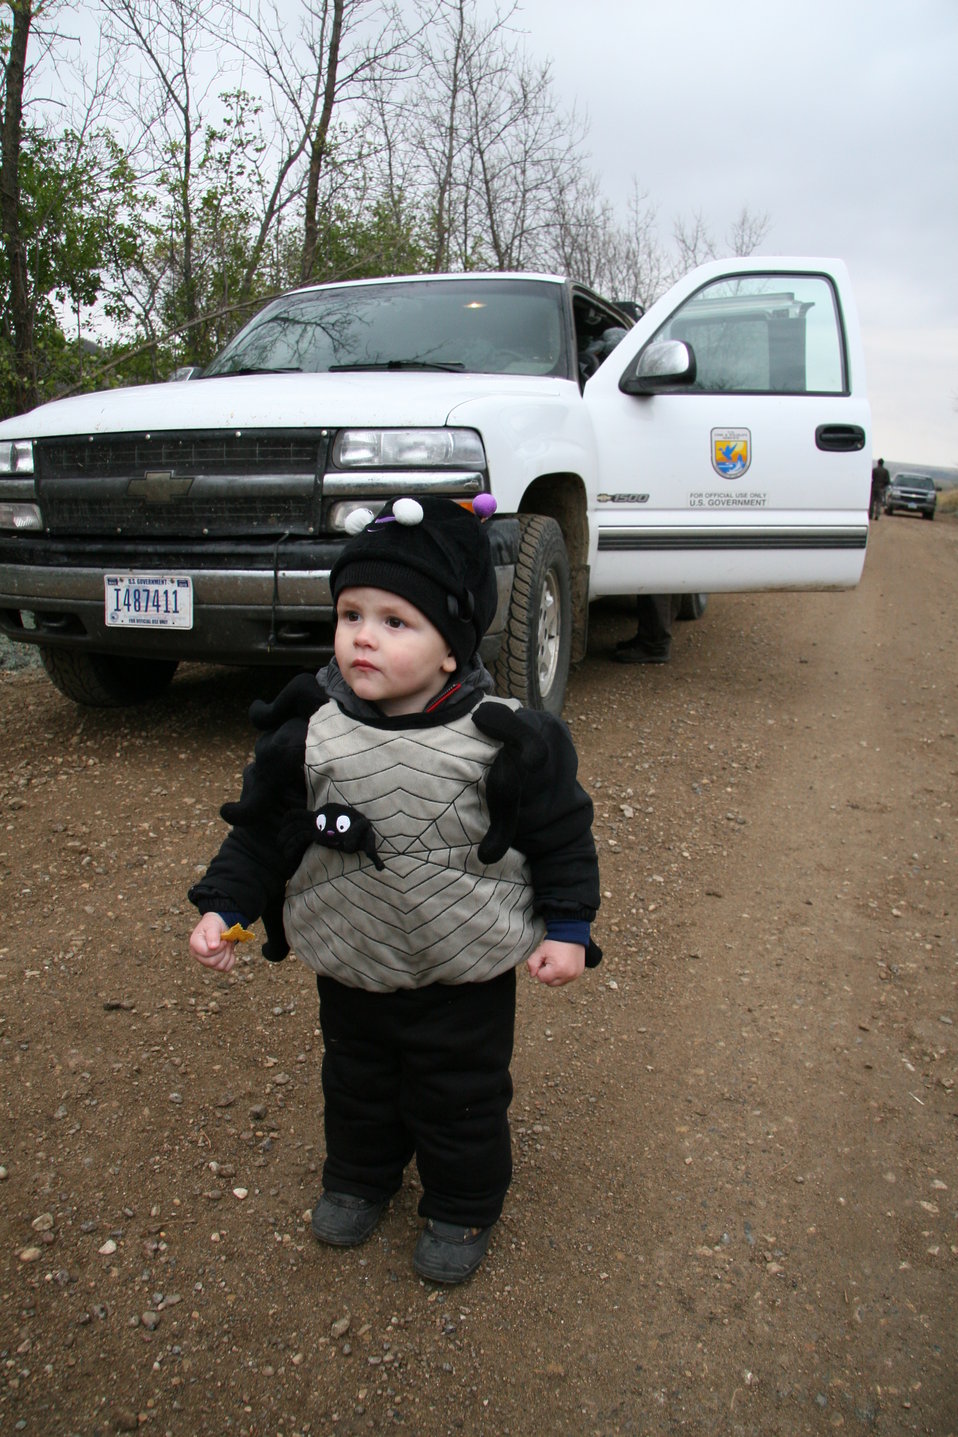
Haunted Hayride

On October 13, 2011 Des Lacs, Lostwood and Upper Souris National Wildlife Refuge staff collaborated to host a Haunted Hayride event on the Des Lacs NWR Boat Dock Road.

Despite the cool weather and rain showers, over 80 participants dressed in Halloween costumes hopped on wagons with bales of hay, and learned about bats and their importance to the ecosystem. The ride concluded with a bonfire at the boat bock area.